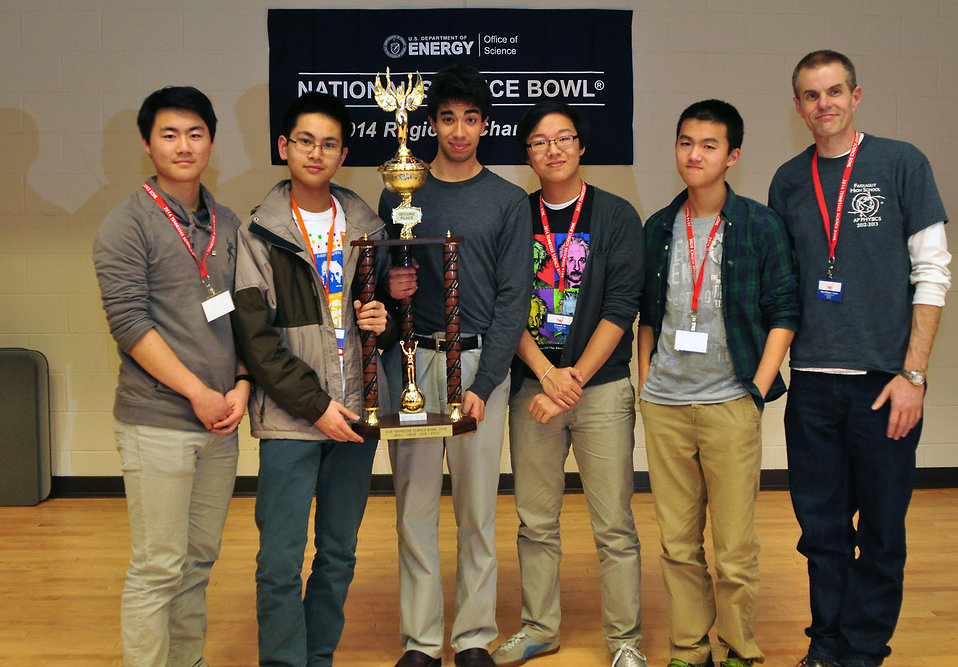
2nd place Farragut HS 2014 TN DOE Science Bowl

14-026 DOE photo Lynn Freeny 2-22-2014Second place Farragut Left to Right Don Joo, Lam Tran, Akshay Soni, Kenneth Ye, Jason Fu, Coach Matthew Milligan